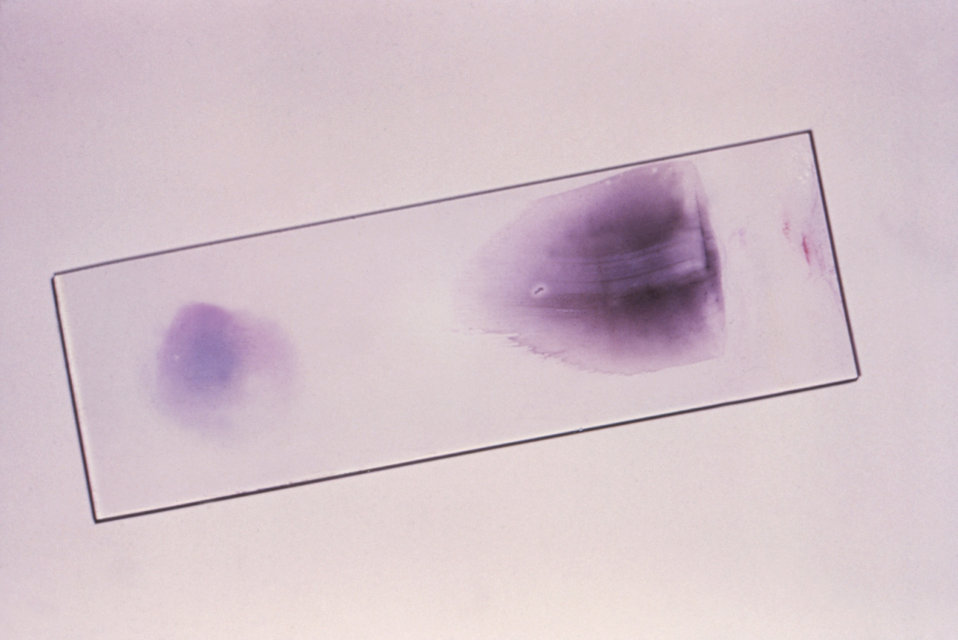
This stained microscope slide is displaying the appearance of both a thick, and thin blood film ready for examination.